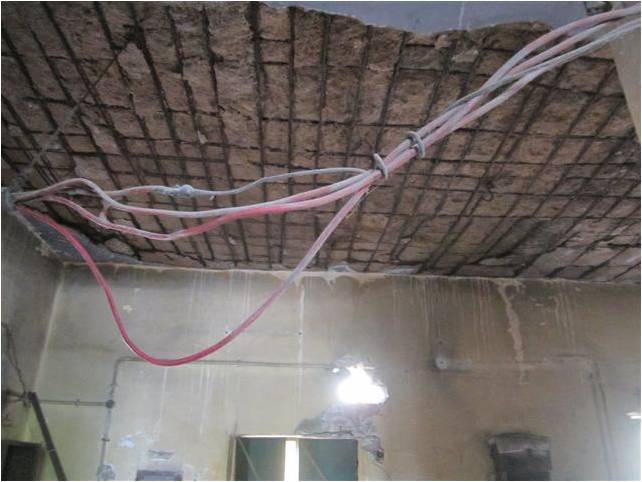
The old pump in a dilapidated state